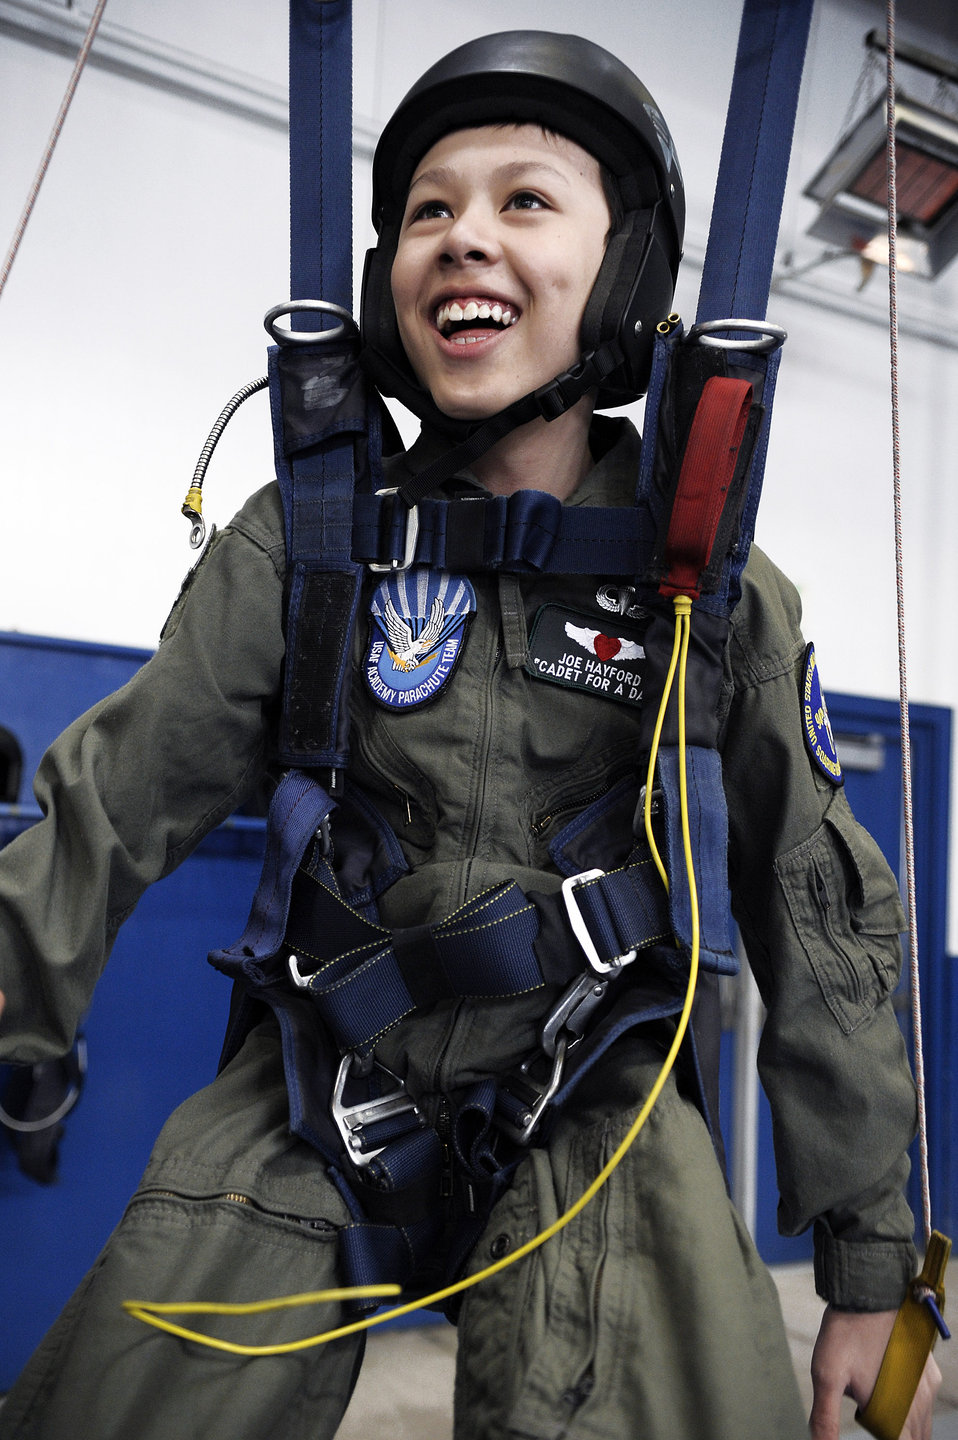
Clouds lift for 'Cadet for a Day'

Cadet for a Day Joe Hayford enjoys the parachute ground training facility as part of his tour of the U.S. Air Force Academy April 10. Cadet squadron 4 sponsored his visit which was organized by the Make-A-Wish foundation.